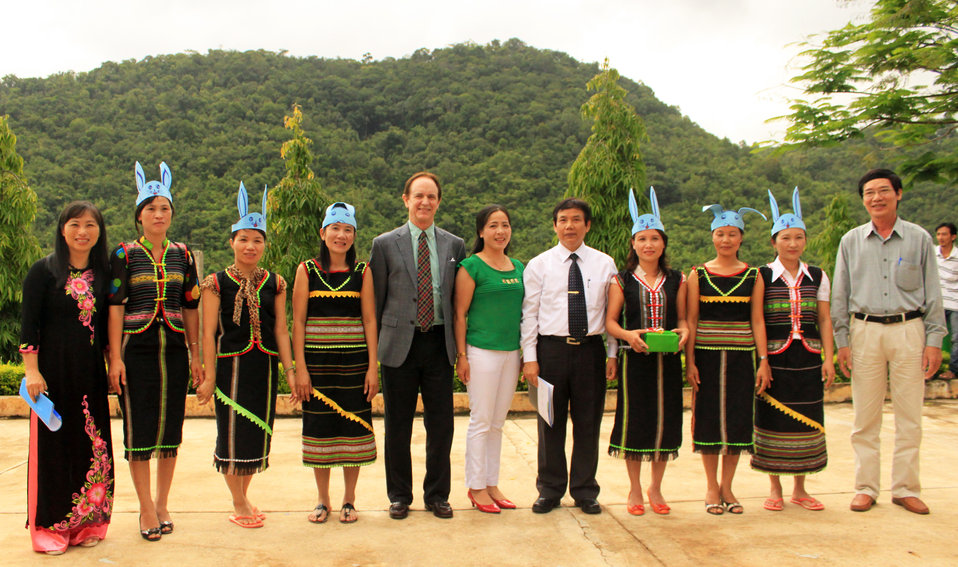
USAID Mission Director Francis Donovan joins local teachers as they practice what they learned from USAID-funded intensive training courses